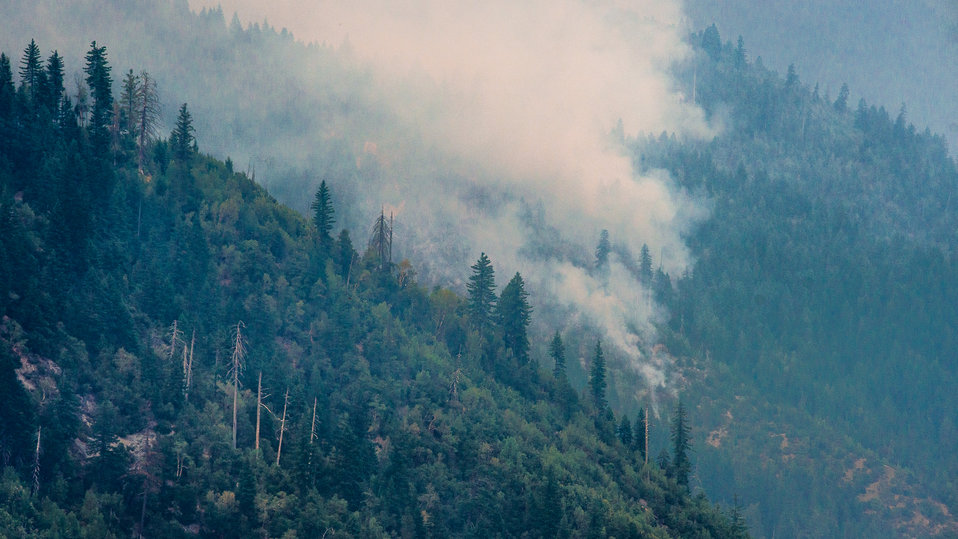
Big Windy Complex Wildlands Fire, 15 miles west of Interstate-5 and East Northeast of Galice, Oregon, with the Incident Command Post (ICP) in Merlin, OR on Friday, Aug 9, 2013.